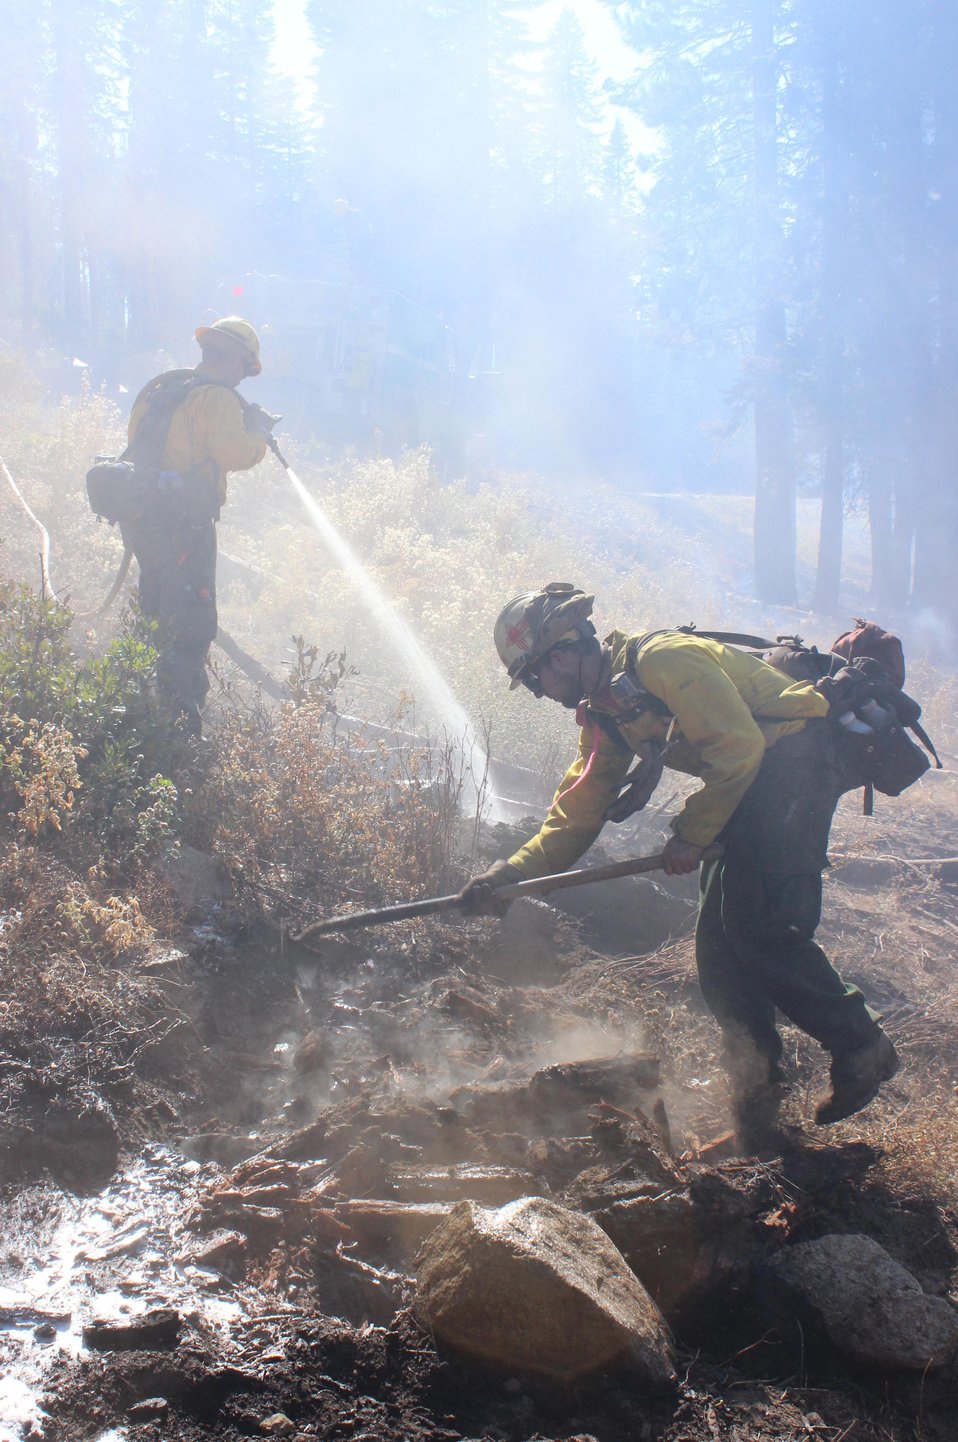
Fire crews mop up hot spots at the Rim Fire. The Rim Fire in the Stanislaus National Forest near in California began on Aug. 17, 2013 and is under investigation. The fire has consumed approximately 253,332 acres and is 80% contained.